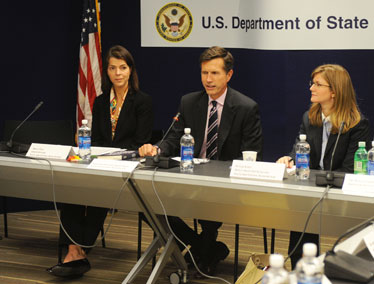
Assistant Secretary Blake and Senior Advisor for Education Dr. Teas Chair the Higher Education Roundtable

Assistant Secretary of State for South and Central Asian Affairs Robert O. Blake (second from left) and Senior Advisor for Education Dr. Molly Maguire Teas (third from left) for South and Central Asian Affairs chair the Higher Education Roundtable in Washington, D.C., on September 16, 2010.